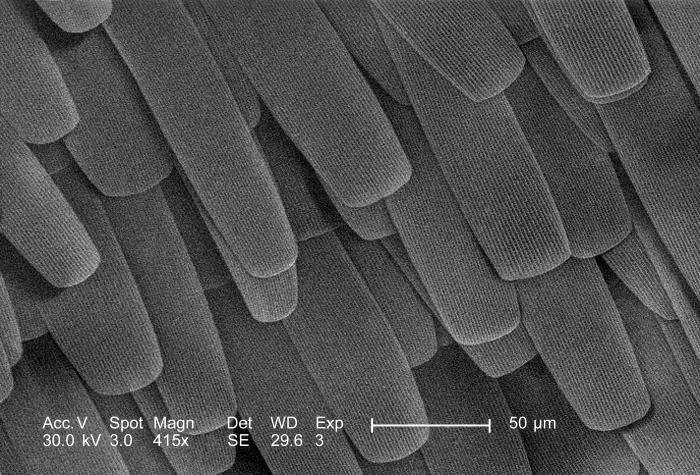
Viewed under a moderately-high magnification 415x, this scanning electron micrograph (SEM) depicted the surface details of an unidentified insect's wing. The organism was discovered on the grounds of the Decatur, Georgia suburbs. The scalar structures, though numerous, were very light, thereby, adding very little to the overall wing-weight. These scales not only add colorful demarcating characteristics to the wings, distinguishing species from one another, as well as sexual differentiation, but act as thermoregulatory control mechanisms, thereby, insulating the insect on colder days, and dissipating excess heat on warmer days.